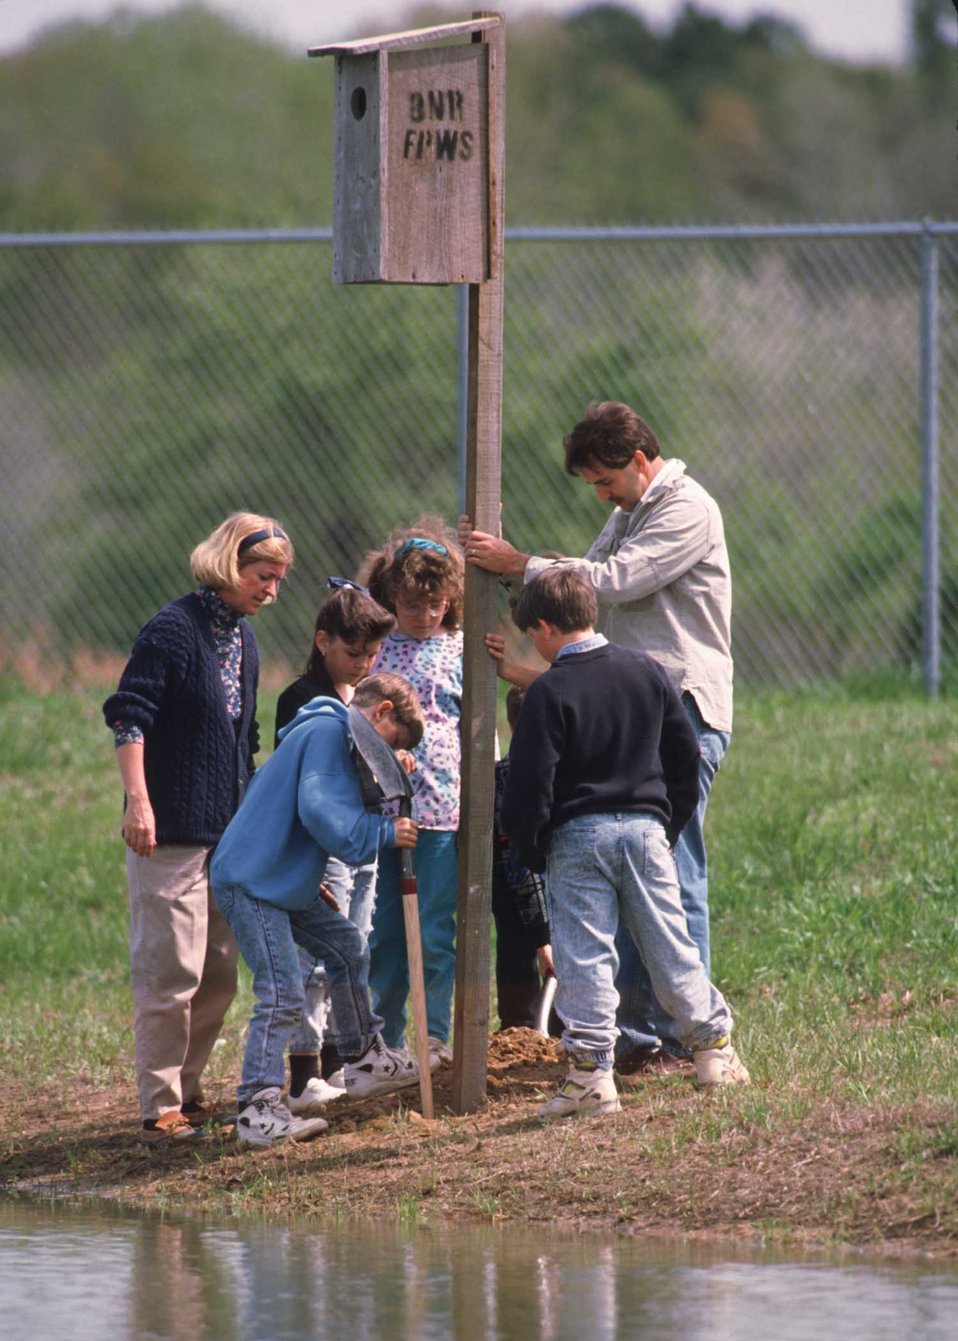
Students at Centreville Middle School erect a duck nesting box as part of an outdoor classroom being built on the school grounds.